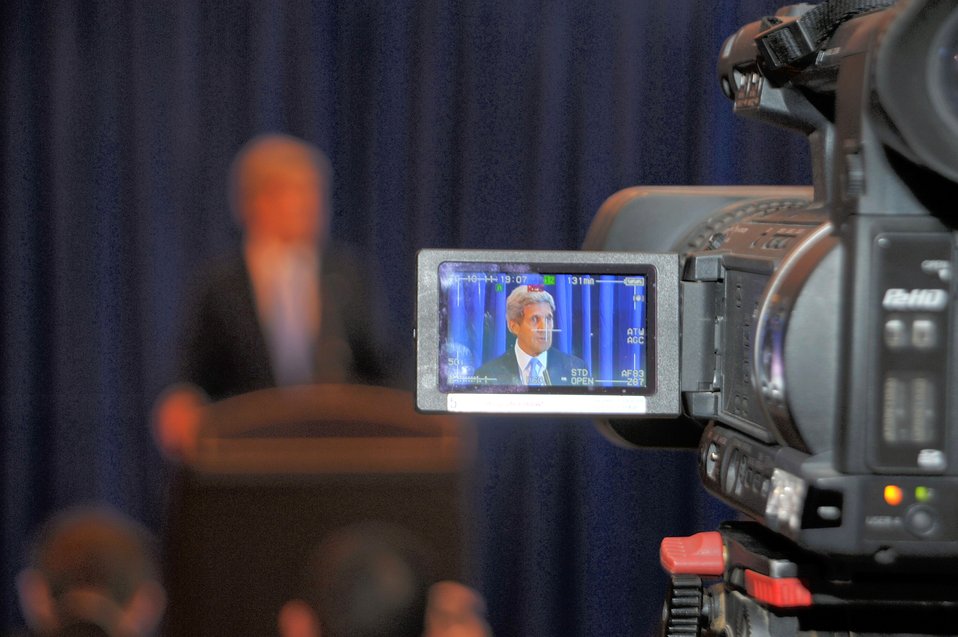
Secretary Kerry Addresses Reporters in Amman, Jordan

U.S. Secretary of State John Kerry appears in a video camera viewfinder during a news conference following Middle East peace negotiations in Amman, Jordan, on July 19, 2013.